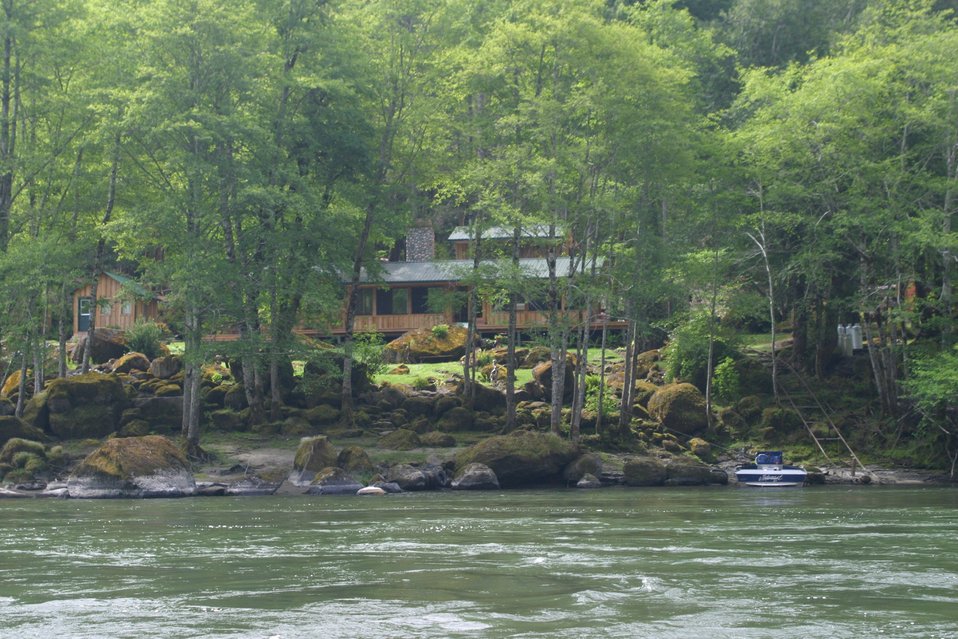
Wild section of the Rogue River from Grave Creek to Foster Bar May 19 to May 22.